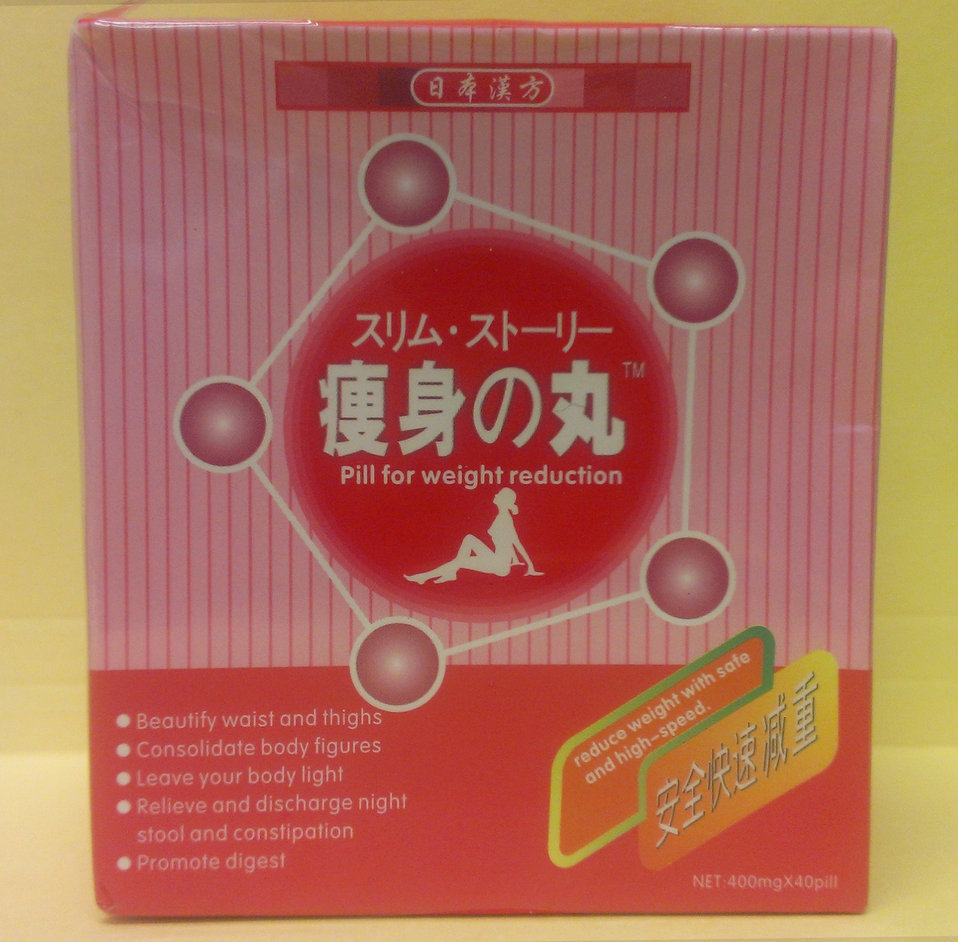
Japan Hokkaido Slimming Weight Loss Pills

November 8, 2012 - The FDA is advising consumers not to purchase or use 'Japan Hokkaido Slimming Weight Loss Pills ,' a product promoted and sold for weight loss. The product was found to contain undeclared sibutramine. For more information, go to www.fda.gov/Drugs/ResourcesForYou/Consumers/BuyingUsingMe....

And read this Consumer Update: Beware of Fraudulent ‘Dietary Supplements’